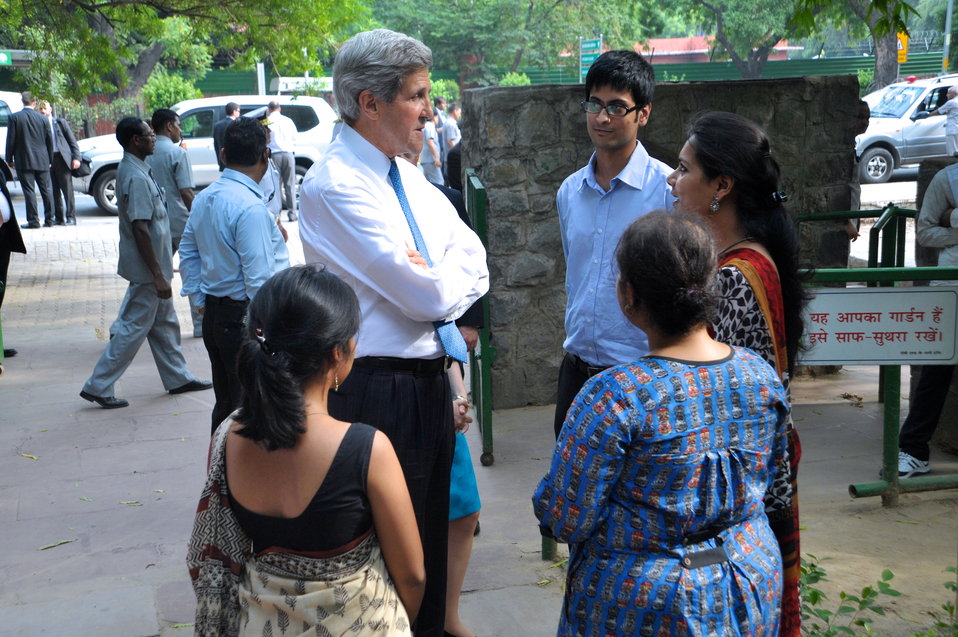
Secretary Kerry Chats With Young Indian Leaders

U.S. Secretary of State John Kerry chats with young Indian leaders who have participated in programs in the United States as he arrives at Lodi Gardens in New Delhi, India on June 24, 2013.